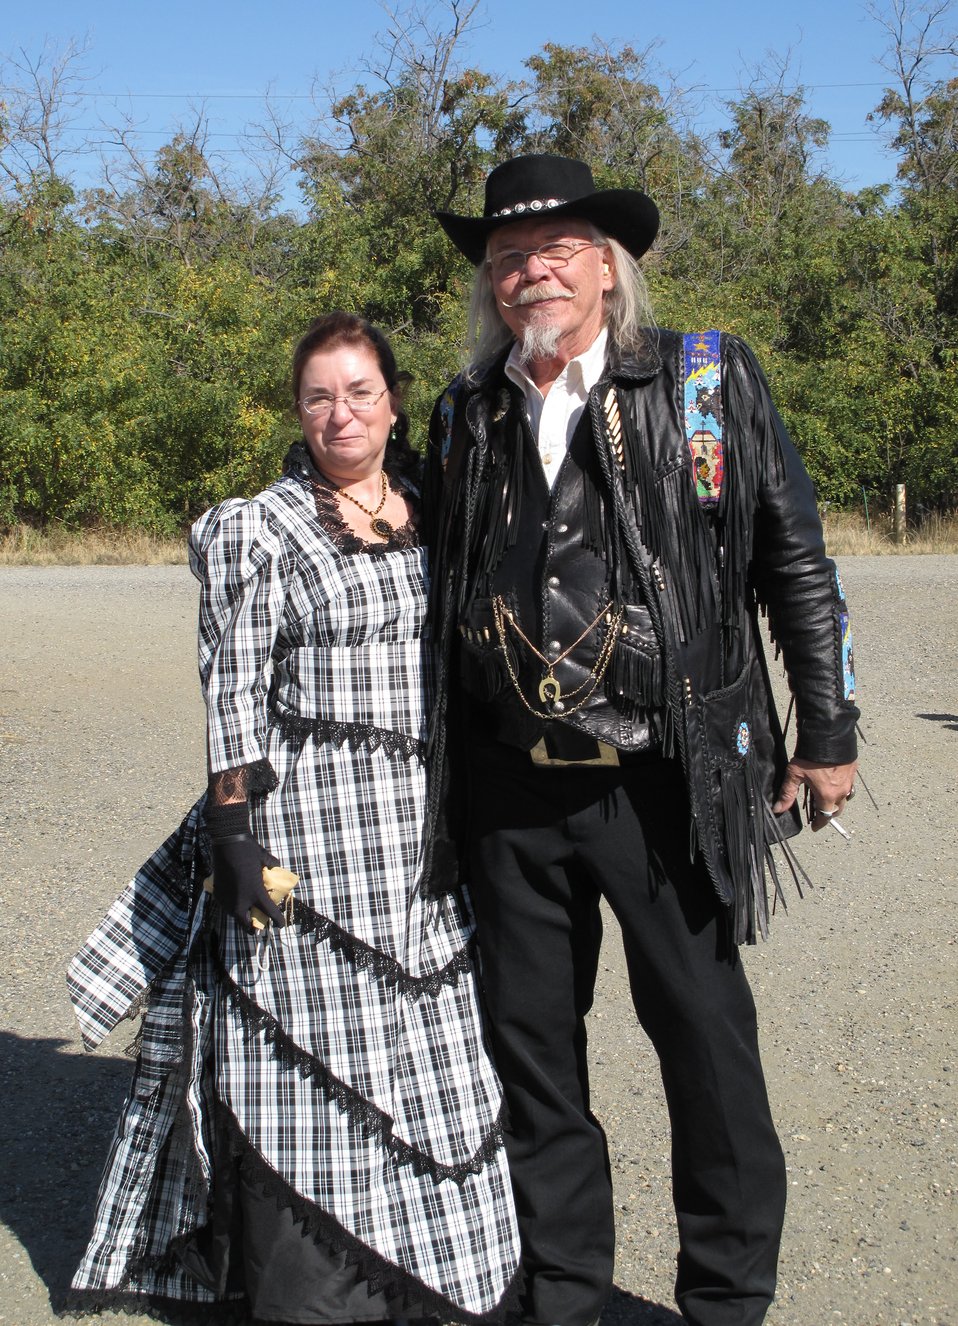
Refuge Round-up 2010

The characters from the buffalo soldiers of the American west.